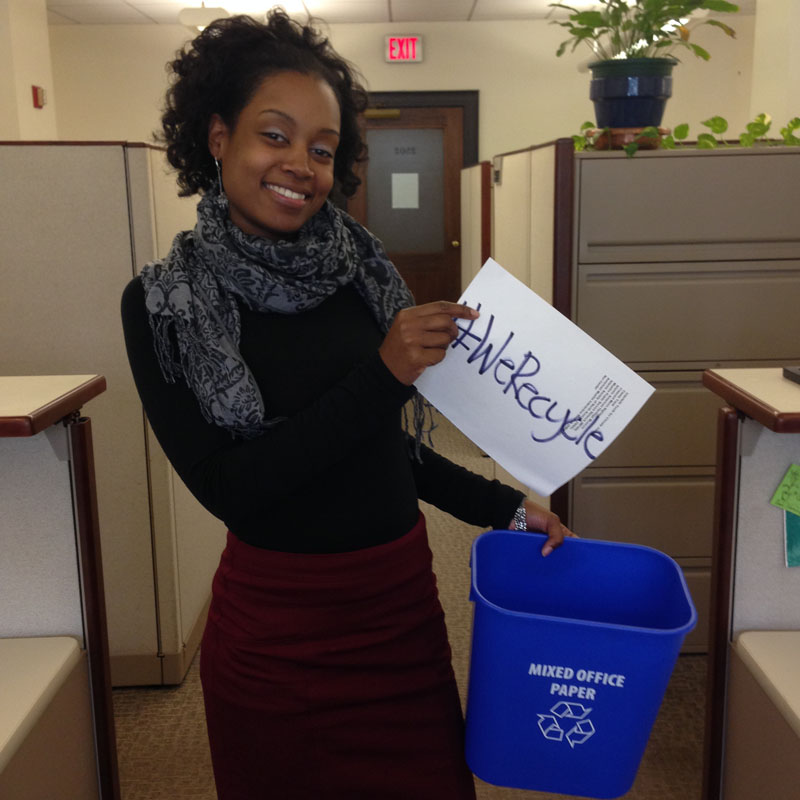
EPA Intern Adell Recycles

At EPA, #WeRecycle. Learn how you can too: www2.epa.gov/recycle